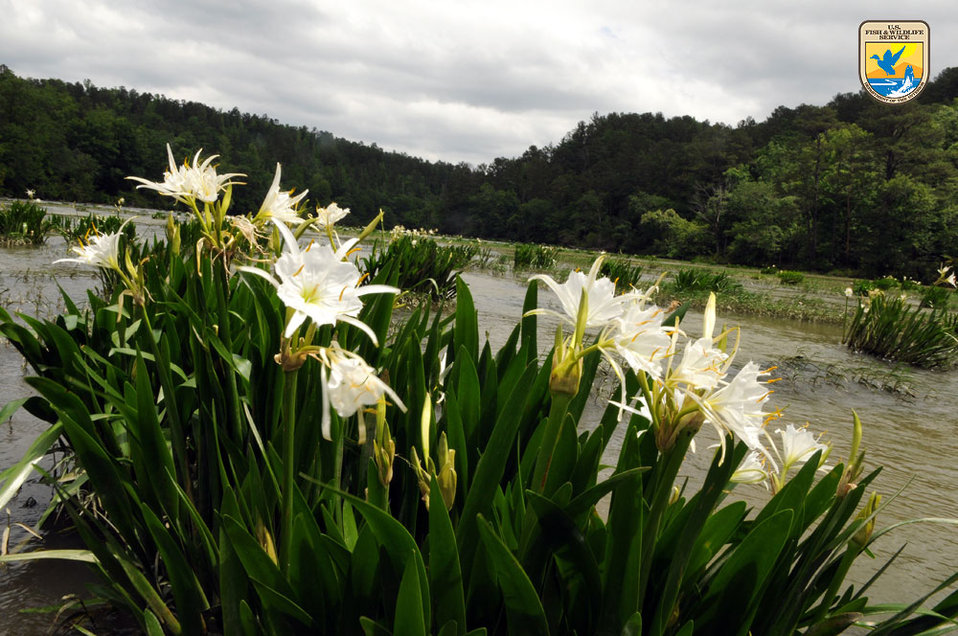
Lillies - Region 4

Lillies grow at Cahaba River National Wildlife Refuge in Alabama.